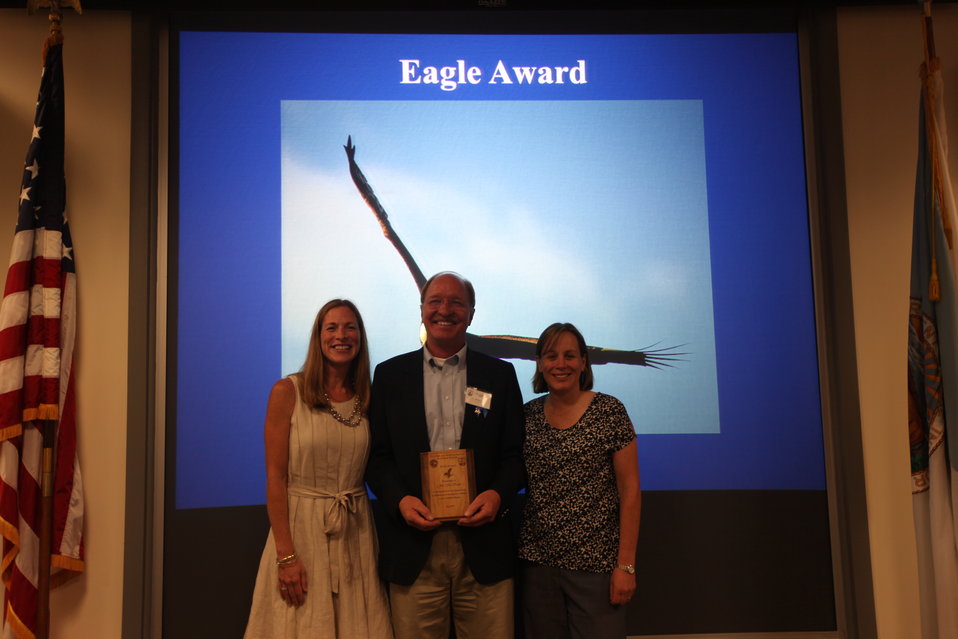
Joe McKeon

2013 R5 Award Ceremony